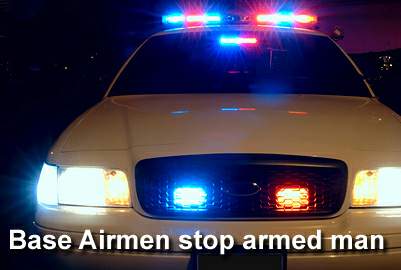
Sheppard security forces disarm individual

Airmen from the 82nd Security Forces Squadron disarmed a man after they received a report of someone carrying a weapon near a building at 9:20 p.m. March 7 at Sheppard Air Force Base, Texas.